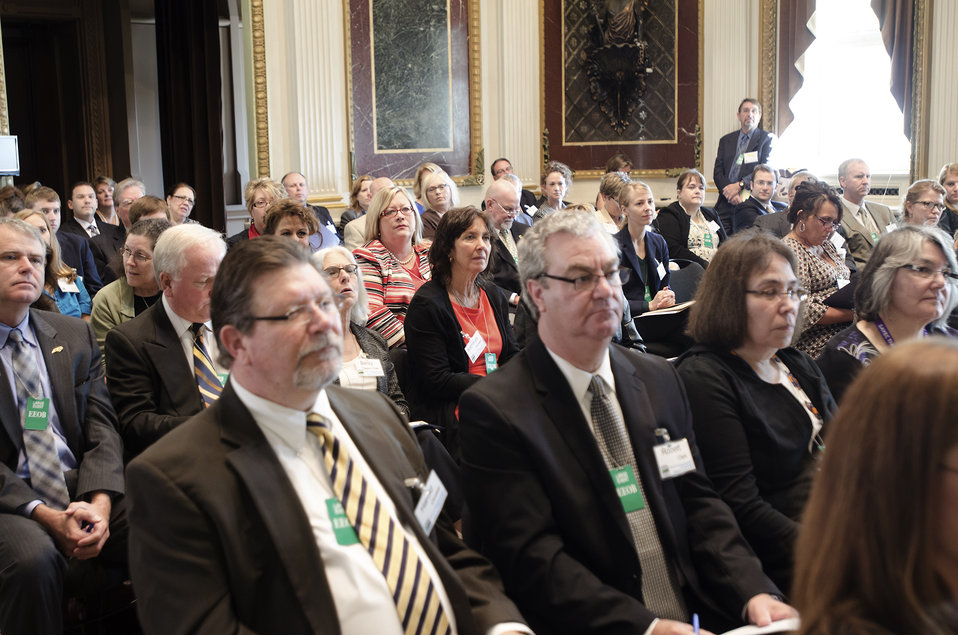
The audience listens to Agriculture Secretary Tom Vilsack during his address at the 2nd Annual meeting of the White House Rural Forum on Regional Innovation at the Executive Office Building in Washington, D.C. on Wednesday, Sep. 18, 2013.